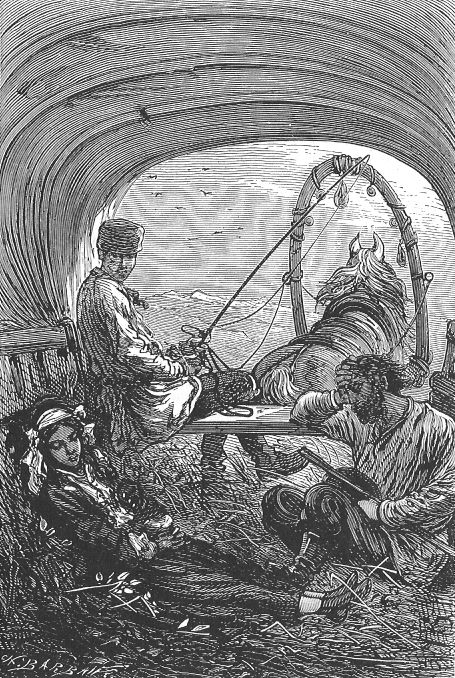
An illustration from the novel 'Michael Strogoff: The Courier of the Czar' by Jules Verne drawn by Jules Férat. Polski: Ilustracja powieści Juliusza Verne'a 'Michał Strogow, kurier carski' autorstwa Julesa Férata. Français : 'Michel Strogoff. Le courier du tzar', Jules Férat. Français : « Elle est gentille », dit Nicolas.